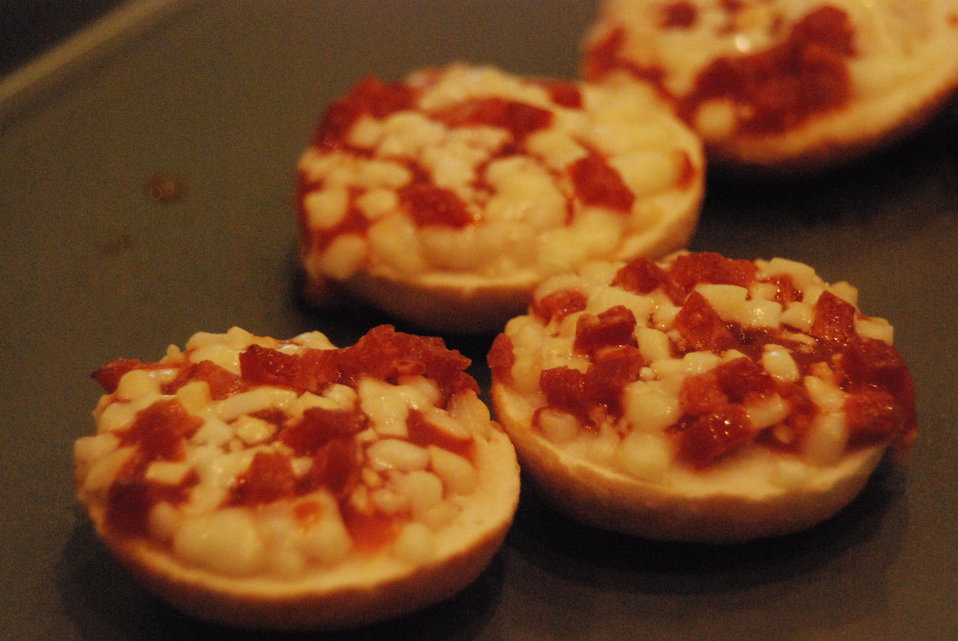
Picture of delicious-looking Bagel Bites-brand pizza bagels.